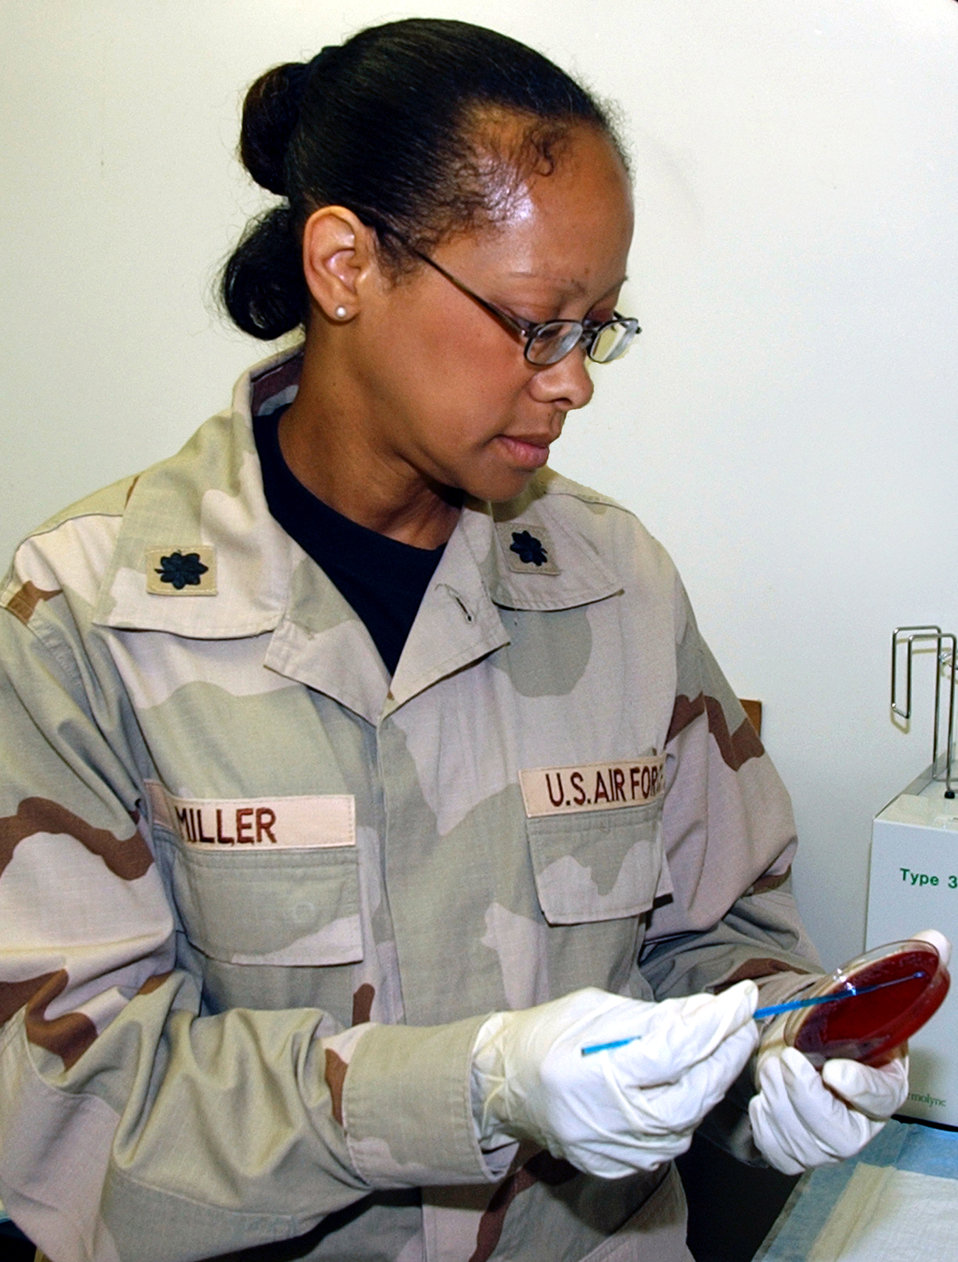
Lab work

OPERATION IRAQI FREEDOM -- Lt. Col. Carolyn Miller tests a blood sample in her laboratory located in a tent hospital that serves thousands of deployed servicemembers supporting Operation Iraqi Freedom.